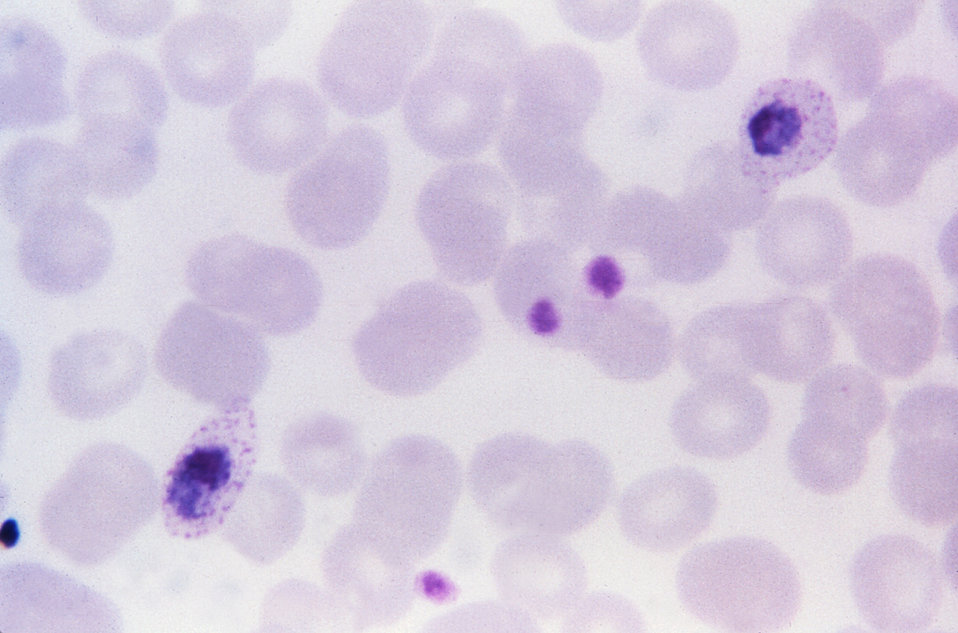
This thin film Giemsa stained micrograph shows older, still growing Plasmodium ovale trophozoites with Sch�'s dots.